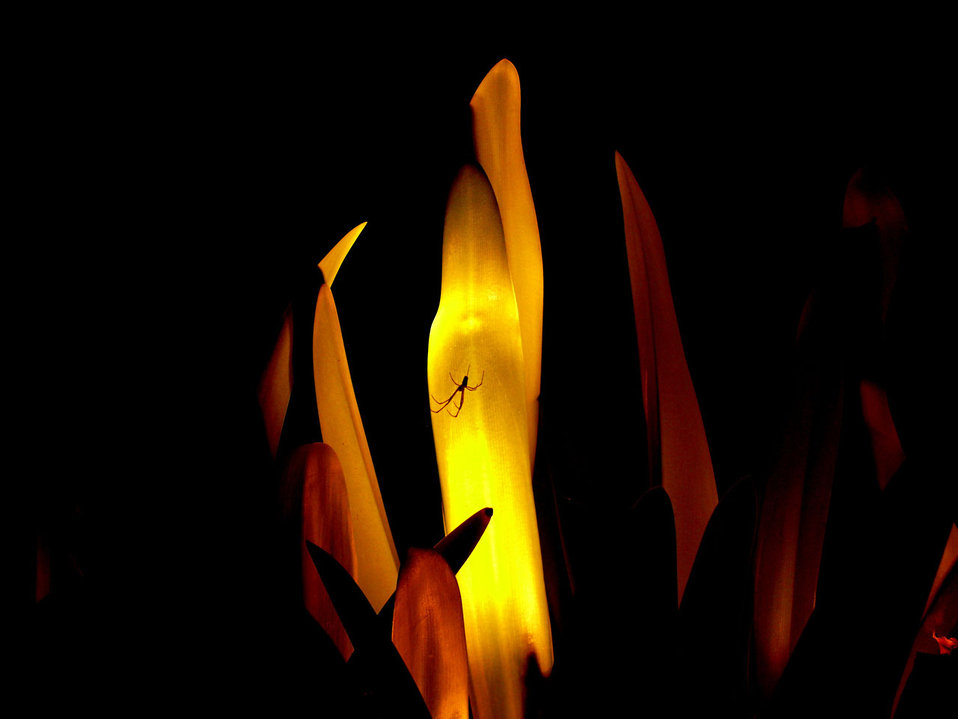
Spider on tree.